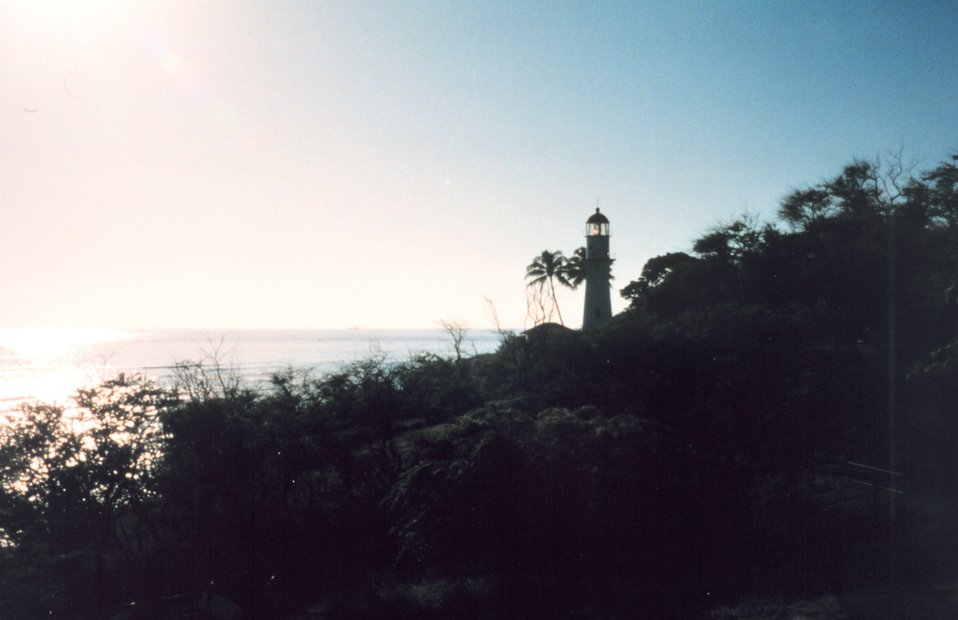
Southeast shore lighthouse